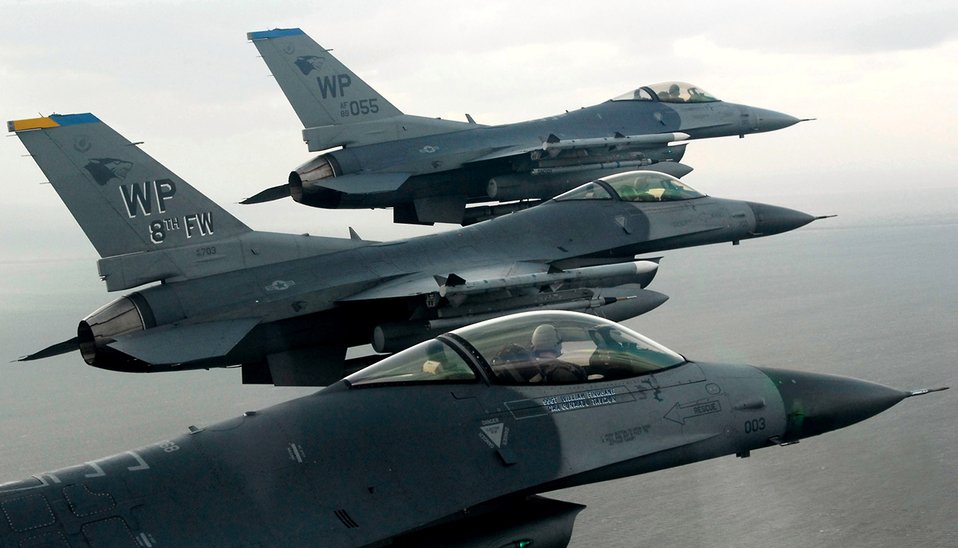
Falcons fly over South Korea

F-16 Fighting Falcons fly on a training mission Jan. 30 over the South Korean peninsula. Pilots assigned to the 35th Fighter Squadron from Kunsan Air Base, South Korea, use training missions to simulate actual conditions they may face in combat and keep their warfighting skills honed.